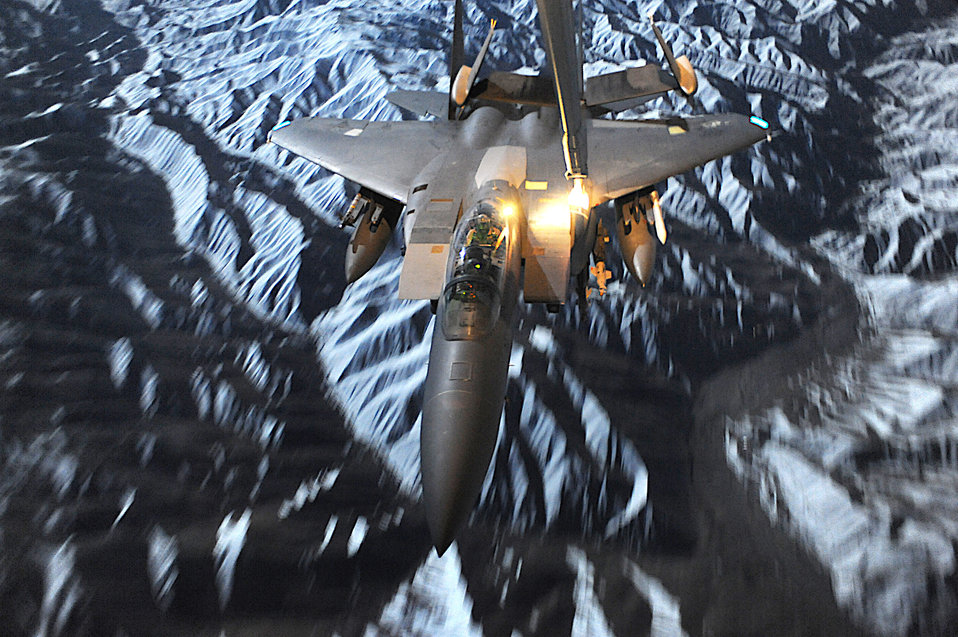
Fill 'er up, please

An F-15E Strike Eagle from the 391st Expeditionary Fighter Squadron at Bagram Airfield, Afghanistan, refuels Dec. 12 during a combat mission.